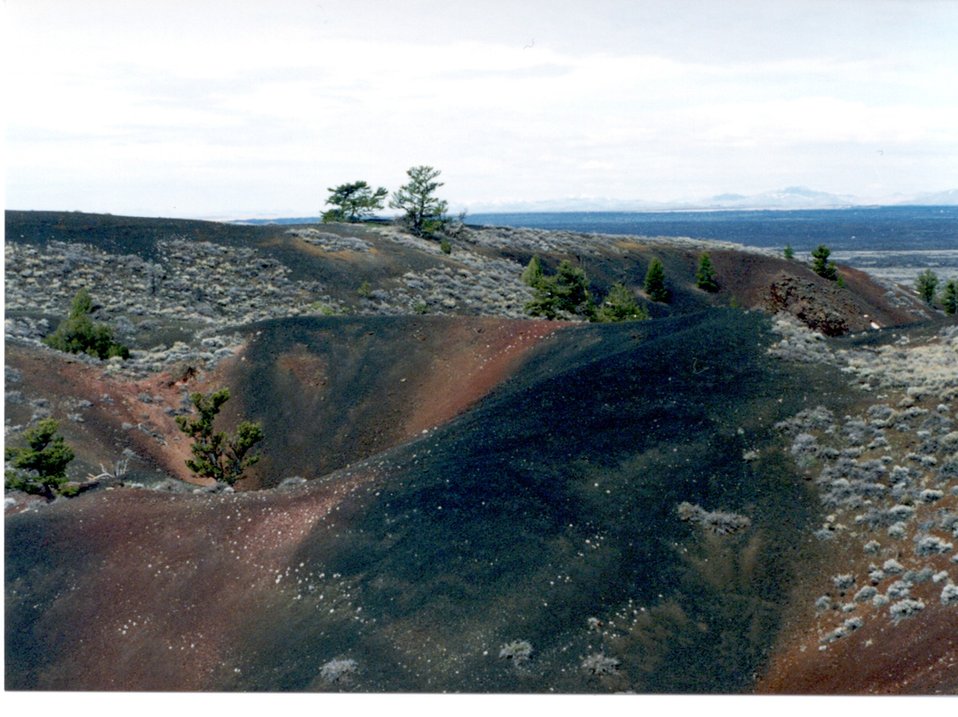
Black Tail Butte Craters of the Moon Shoshone Field Office USRD Upper Snake River District